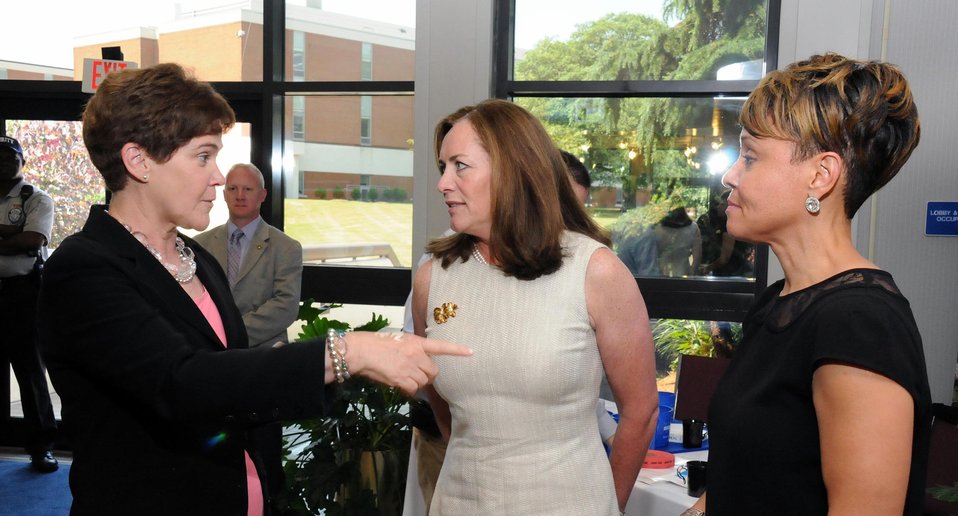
(L to R) Agriculture Deputy Secretary Krysta Harden, Virginia First Lady Dorothy McAuliffe and Virginia State University, Dean of Agriculture School, Dr Jewell Hairston meet with stakeholders, government and regional leaders to identify initiatives for working families and businesses in rural areas at the White House Summit on Working Families in Petersburg, VA on Wednesday, Jun. 11, 2014. This forum is part of a series of regionally hosted conversations leading up to the Jun. 23, 2014, White House Summit on Working Families.